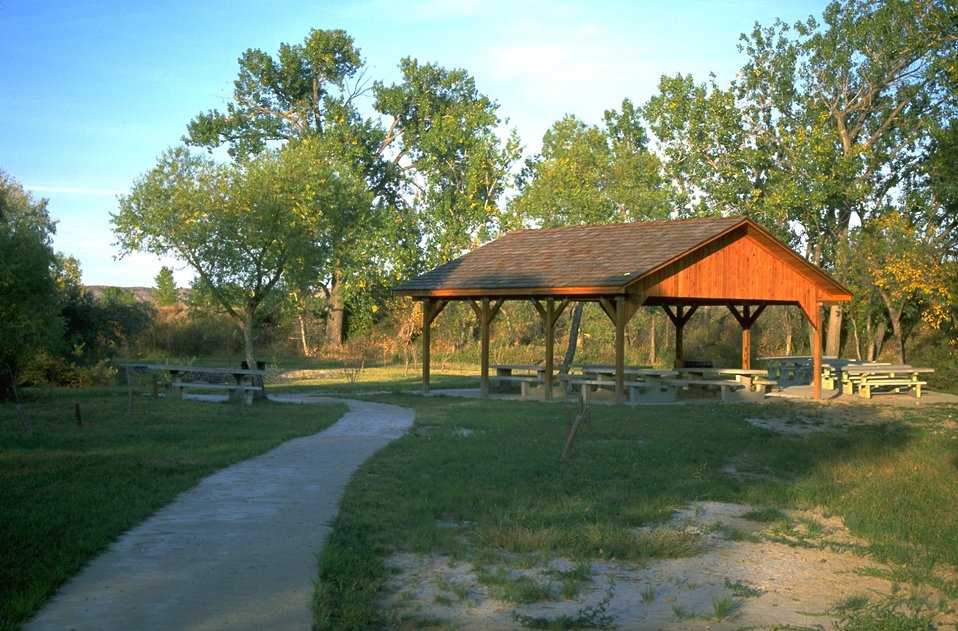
Group shelter and picnic area at Matthews Recreation Site